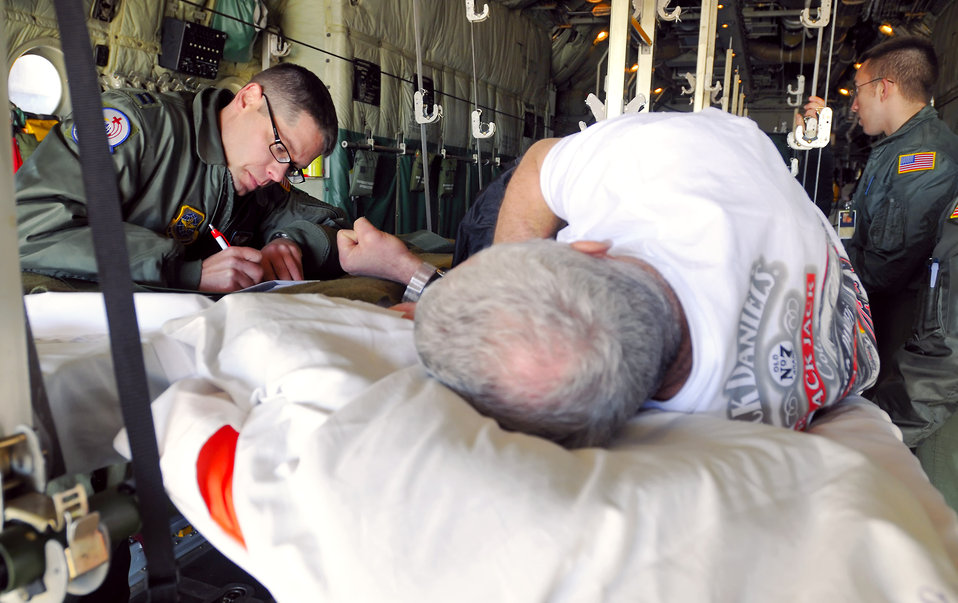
Evacuation system continues improving to get troops home

Capt. Kirk Smith records medication provided to a patient during a medical evacuation flight. Captain Smith is a 375th Aeromedical Evacuation Squadron flight nurse from Scott Air Force Base, Ill.